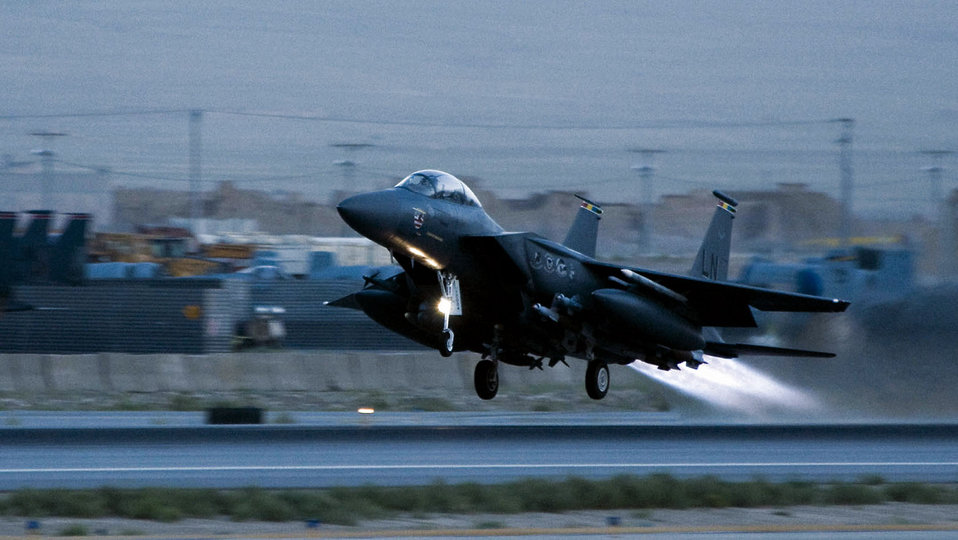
July 18 airpower summary: F-15Es bomb enemy snipers

An F-15E Strike Eagle takes off from Bagram Air Base supporting Operation Enduring Freedom. The F-15E is a dual-role fighter designed to perform air-to-air and air-to-ground missions. An array of avionics and electronics systems gives the F-15E the capability to fight at low altitude, day or night, and in all weather.